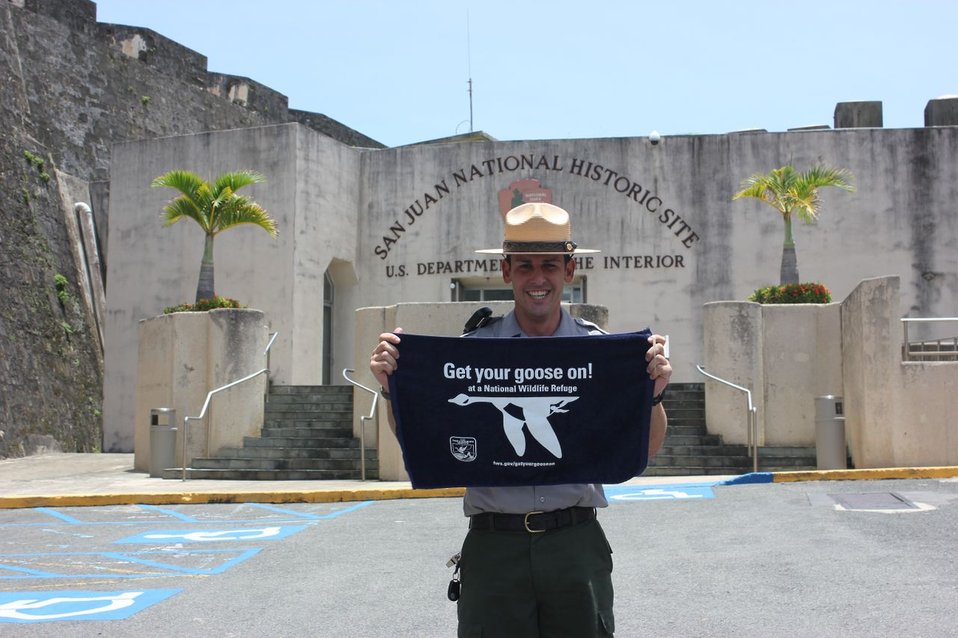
Park Service Employees Get Their Goose On, Too!

National Park Service Employee, Angel Cuevas, gets his goose on in front of Castillo de San Cristobal - the largest fort in Puerto Rico, and the largest fortification built by the Spanish in the Western Hemisphere.